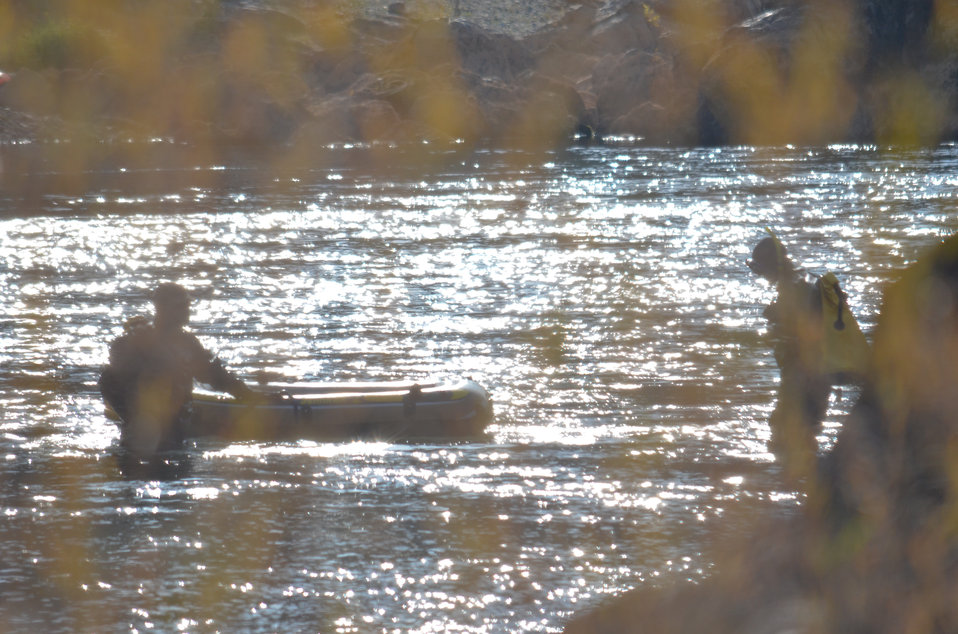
Tracking salmon spawning below Englebright Dam

Biologists with the Pacific States Marine Fisheries Commission Casey Campos (left) and Ryan Greathouse look for evidence of salmon spawning in the Yuba River below Englebright Dam near Smartsville, Calif., Dec. 12, 2011. Under the direction of the National Marine Fisheries Service, the U.S. Army Corps of Engineers Sacramento District, which owns and manages the dam, has placed more than 5,000 tons of gravel in the river to improve spawning habitat for the threatened Chinook salmon and steelhead trout species. The PSMFC is charged with tracking spawning activity related to the new gravel.